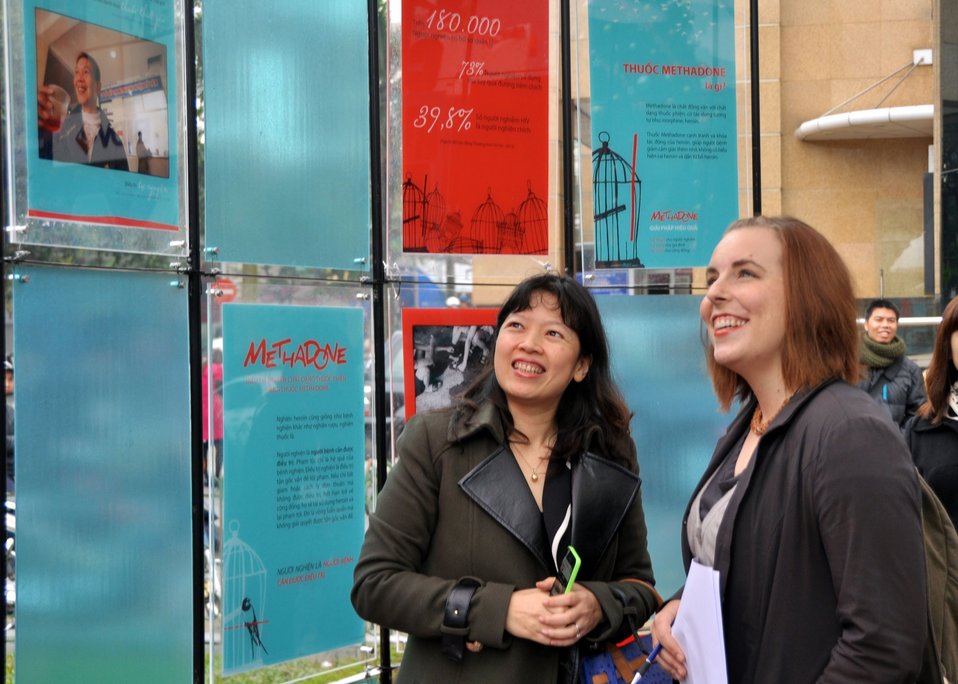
Photo Exhibition Launch

USAID/Vietnam